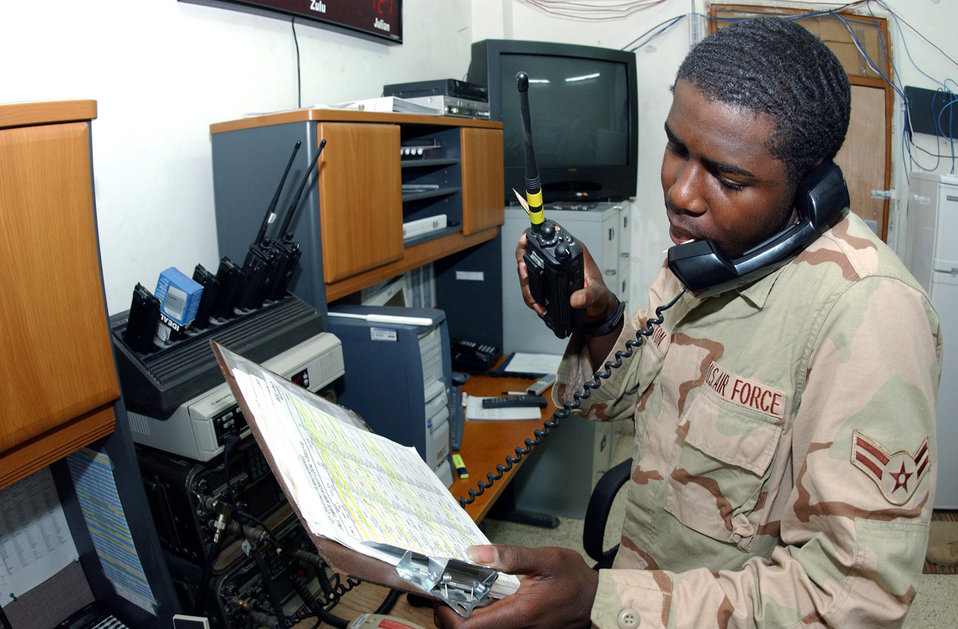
Keeping information flowing

BALAD AIR BASE, Iraq -- Airman 1st Class Kevin Preston Jr. relays information from an aircrew to maintainers. He is an emergency action controller with the 322nd Air Expeditionary Wing's command post here and is deployed from Cannon Air Force Base, N.M.